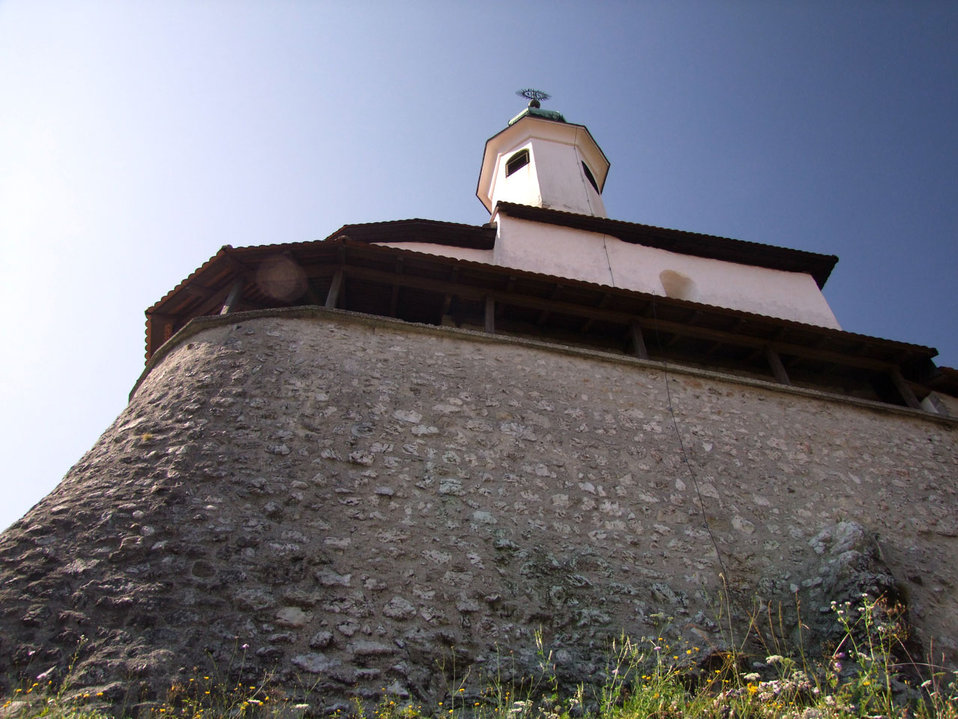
Mali grad church

City of kamnik in slovenia has beautifull life inside.